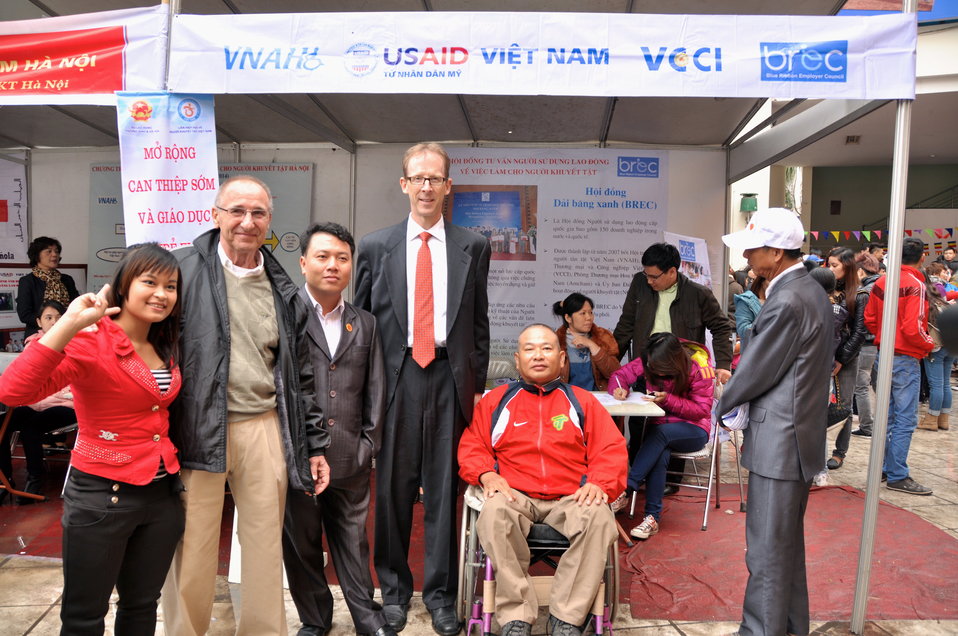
USAID joins celebration of International Day of Persons with Disabilities in Hanoi, Vietnam

December 2, 2012